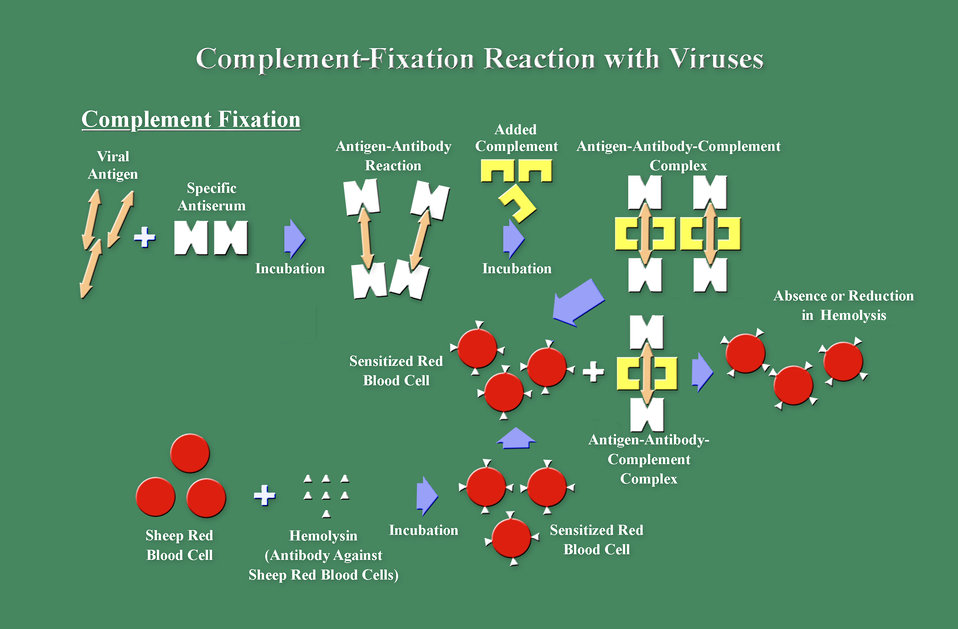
This illustration, and PHIL 14989, depicts what takes place during a complement-fixation test, used to determine the presence of an antigen-antibody complex within a serum sample, and whether or not, with the addition of a complement to the sample, the complement remains free, or in turn, is bound to the antigen-antibody complex.